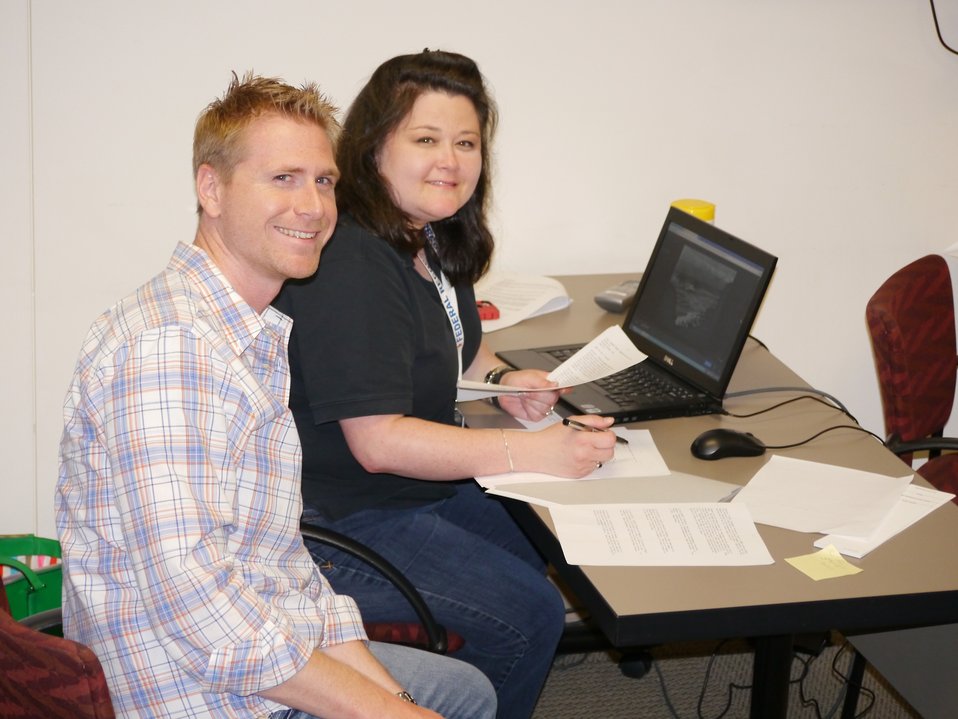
Michael Wright (archivist) and Jenny Sweeney (education specialist) are preparing for Friday Freebie presentation on records pertaining to D-Day.; Location: John Burgess Facility, National Archives at Fort Worth, Fort Worth, TX